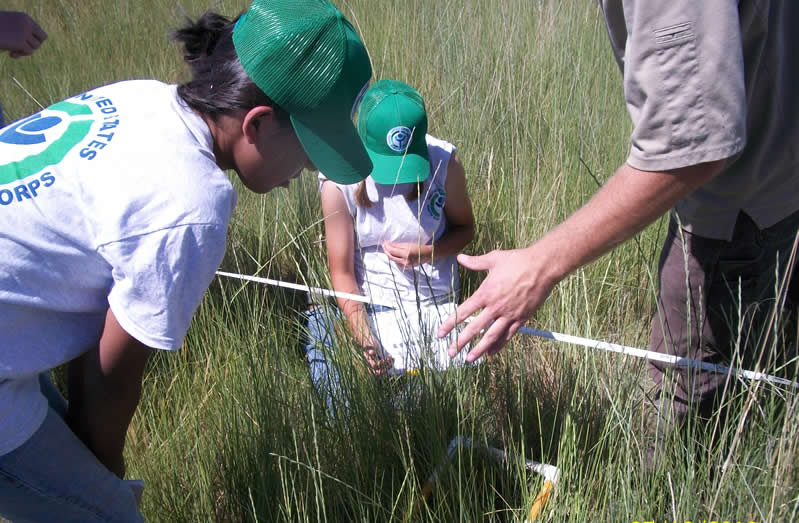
Vegetation Survey

The Youth Conservation Corp looked for nests, banded chicks, and assisted with vegetation data collection on Bear River Migratory Bird Refuge. This was part of a research study by Weber State University professor, John Cavitt.